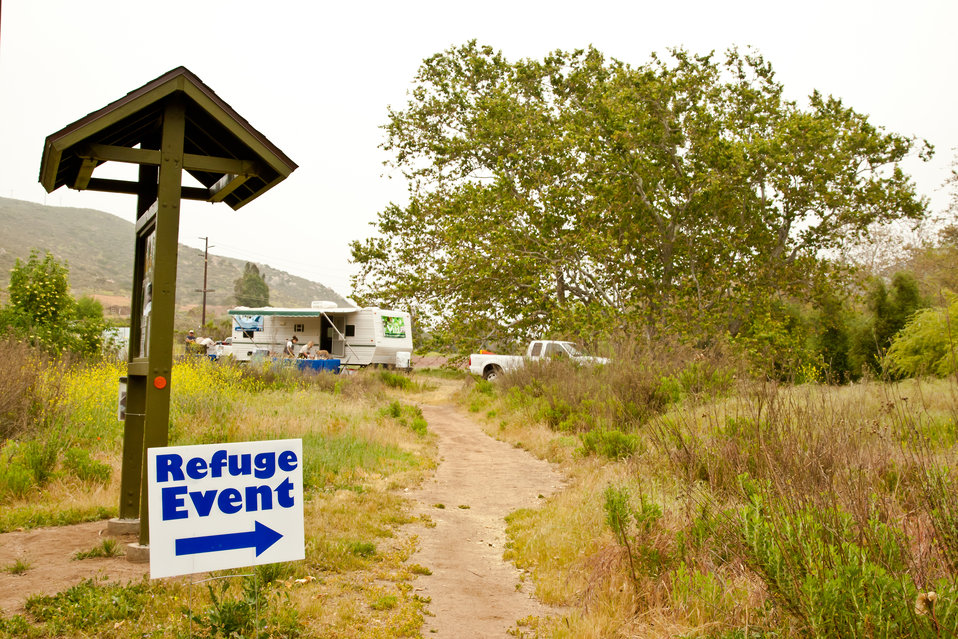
Sweetwater River Interpretive Loop trail head

Earth Day 2012 set up at the trail head. Welcome visitors!